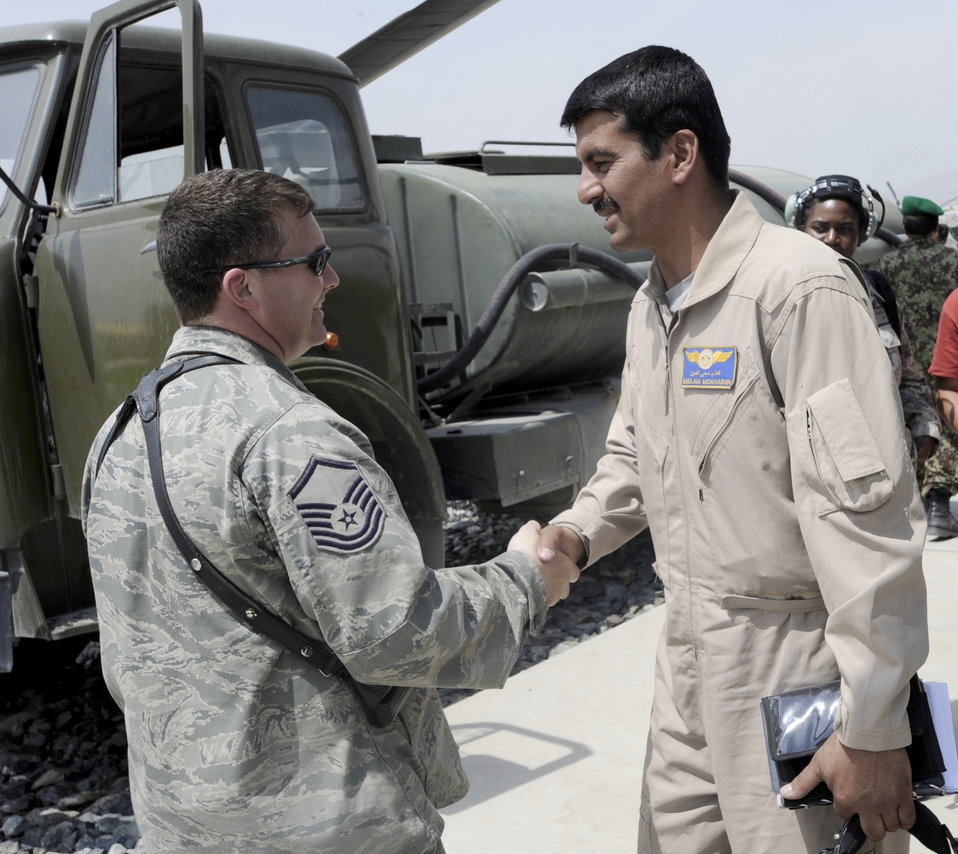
Armament adviser

Master Sgt. Raymond Rogers greets Afghanistan National Army Air Corps Capt. Gholam Mohaiudin prior to a training mission May 15, 2010, at Kabul International Airport, Aghanistan. Sergeant Rogers is a 438th Air Expeditionary Advisory Squadron armament and ammunition flight adviser and Lieutenant Mohaiudin is a Mi-35 Hind E helicopter pilot.